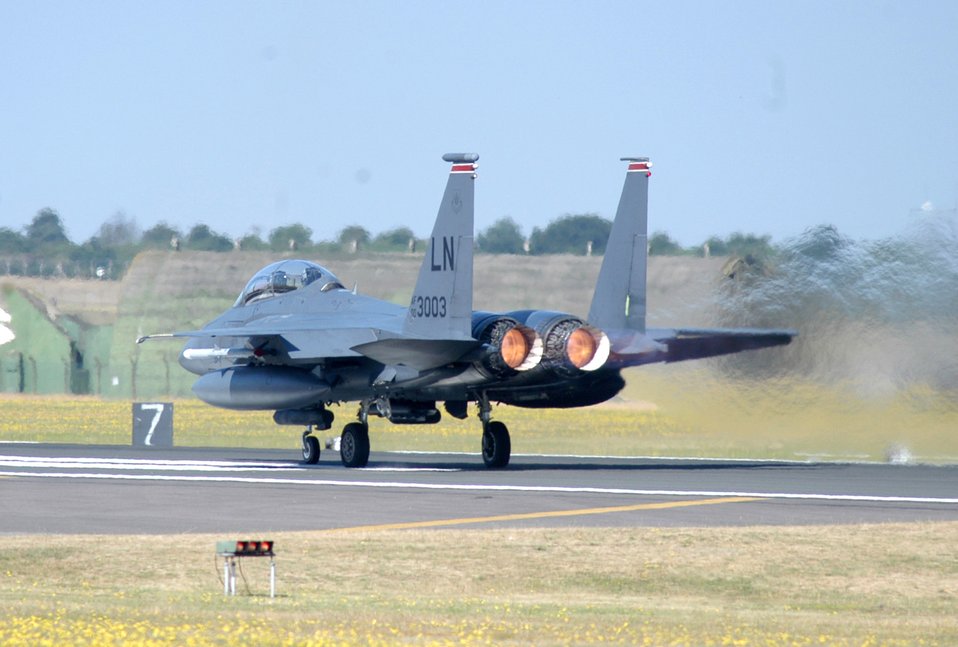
Lakenheath tests small-diameter bombs

A modified F-15E Strike Eagle, assigned to the 494th Fighter Squadron, launched on an operational training mission with the bomb release unit-61 attached to the center pylon at Royal Air Force Lakenheath, England, Monday. The aircraft was one of four to participate in the first training mission with the new technology. The BRU-61 carries the newest small-diameter bomb, the guided bomb unit-39, into battle when the unit deploys in September.